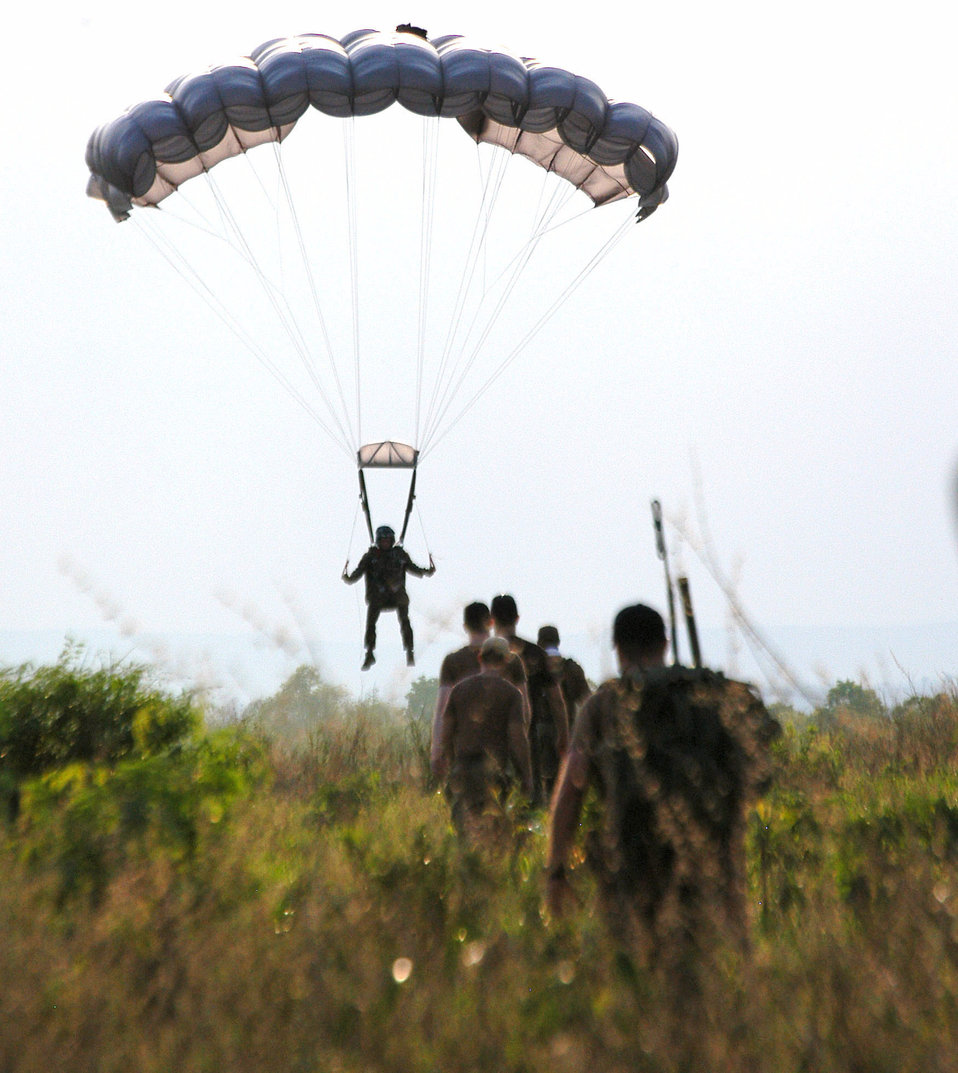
Thais, Americans join forces for Operation Teak Torch training

Drop zone controllers head out to recover a jumper from the 320th Special Tactics Squadron during Exercise Teak Torch at Udon Thani, Thailand. Jumpers from both the 353rd Special Operations Group and the Royal Thai air force completed daily